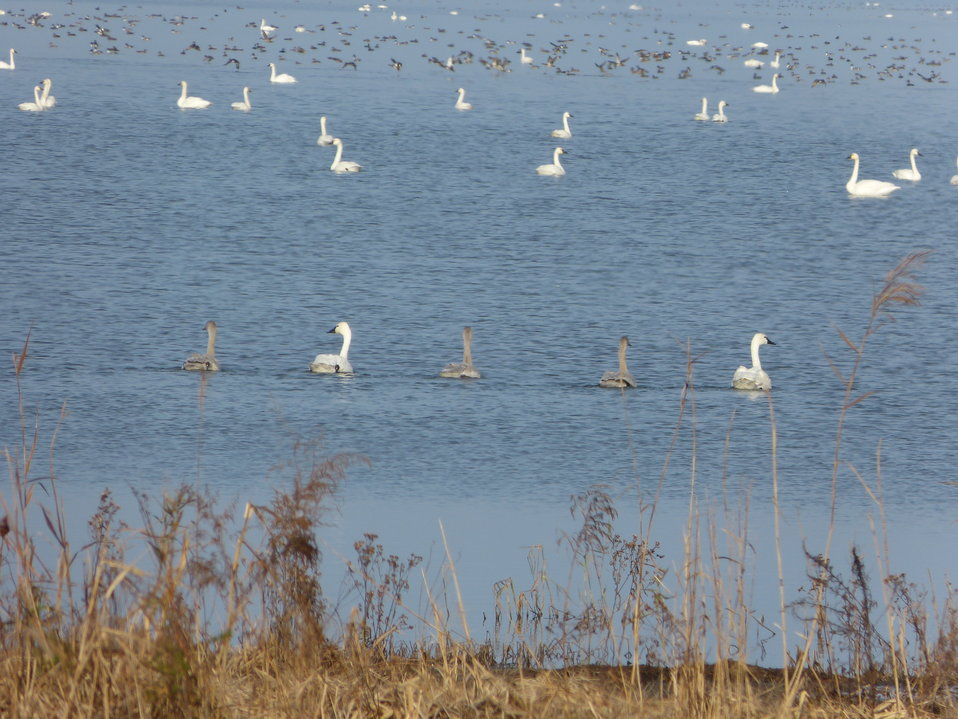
Swan family

At Mattamuskeet National Wildlife Refuge in North Carolina. The Refuge’s prime location along the Atlantic Flyway makes it a vitally important stopover for wintering waterfowl.